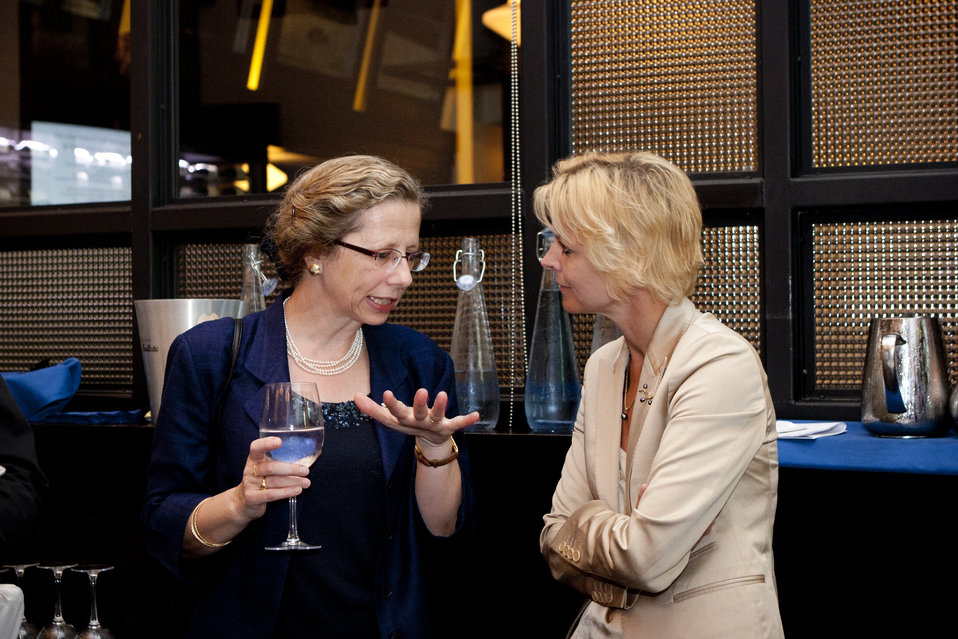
WomenandEnergy 24